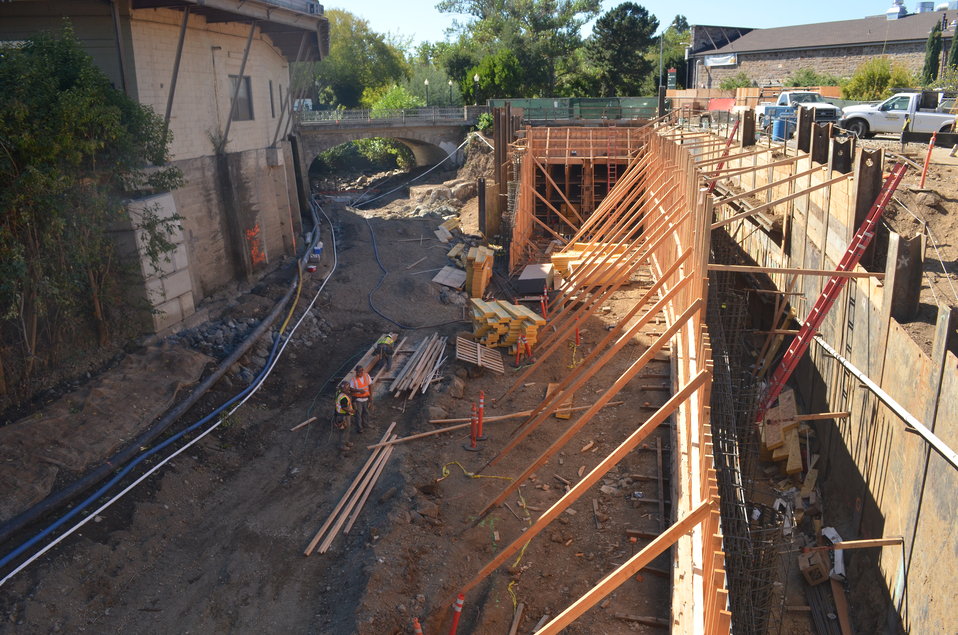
Napa flood risk reduction efforts

Ongoing construction in Napa Creek to build a culvert that will help carry water through the creek during high water events. (US Army Corps of Engineers/DeDe Cordell)